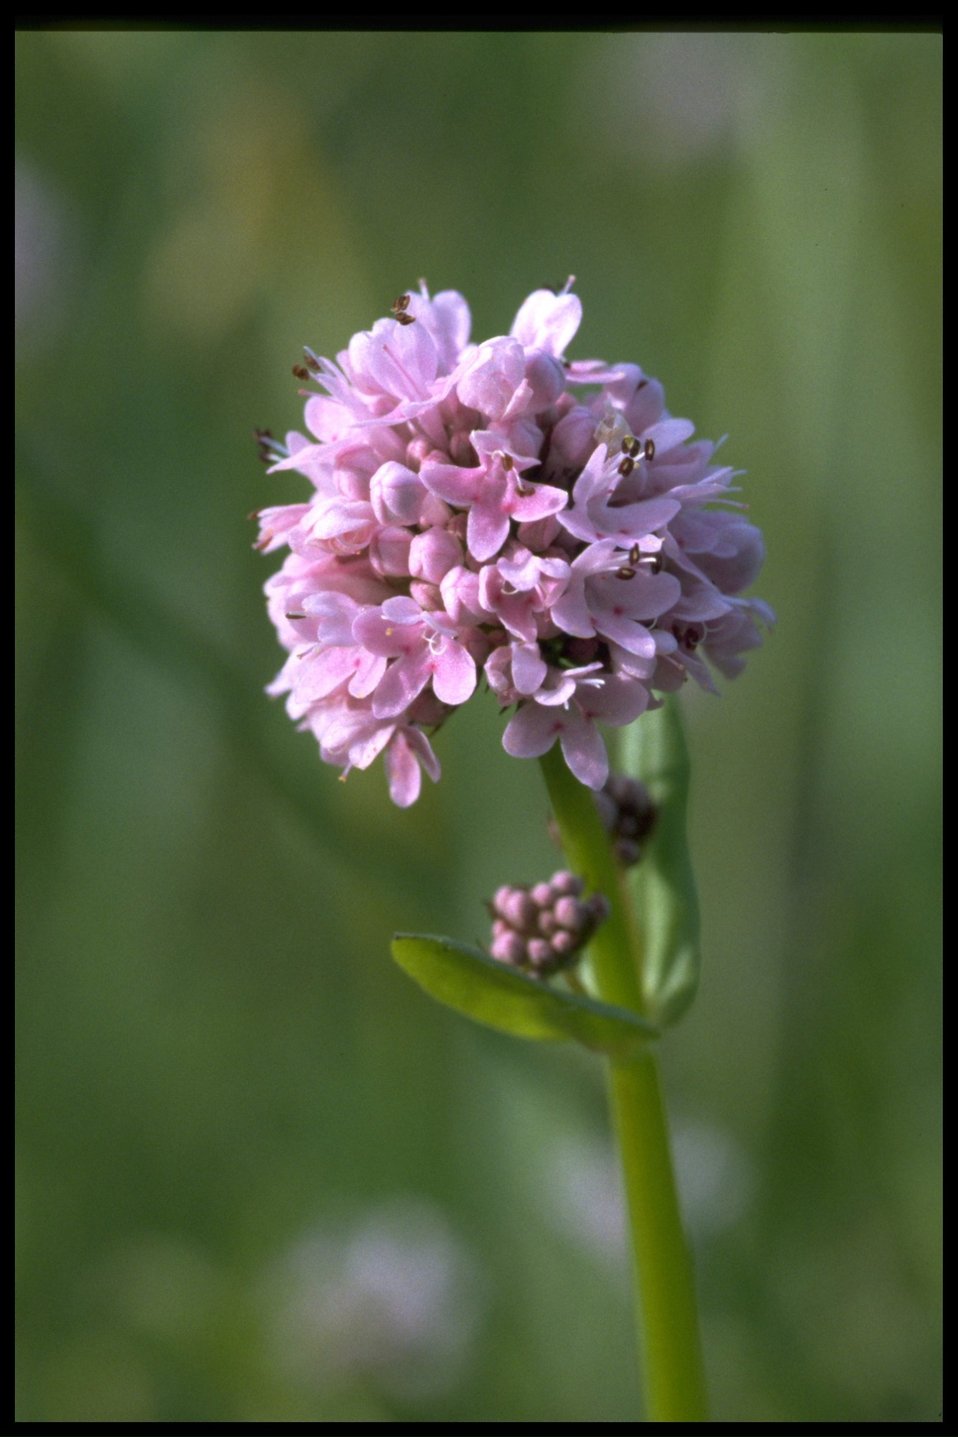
Closeup shot of Plectritis congesta.